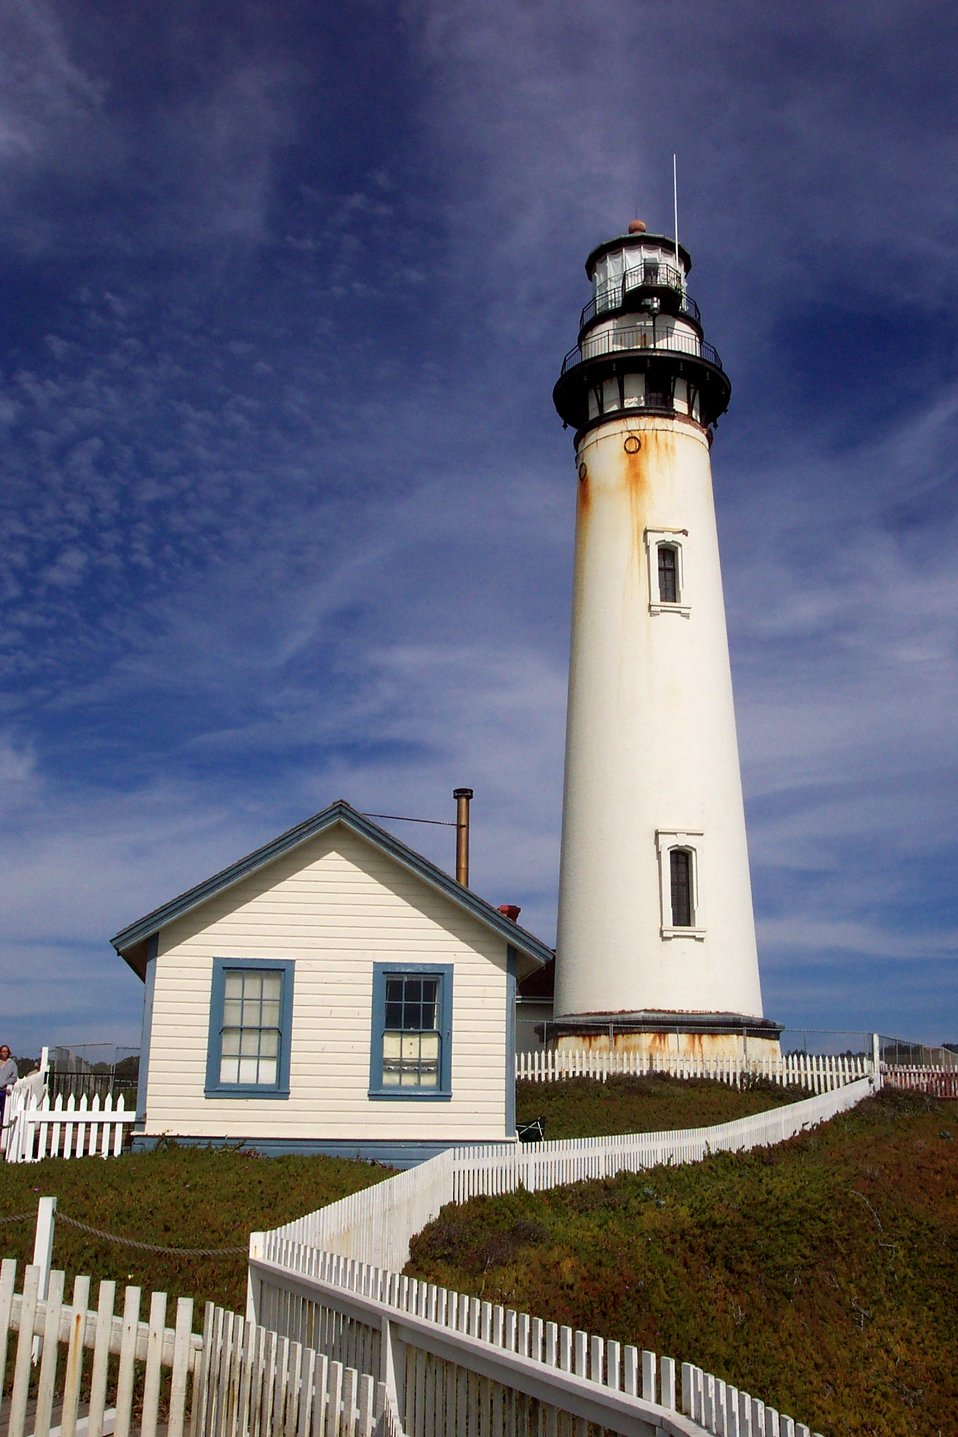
Pigeon Point Lighthouse, 27 miles north of Santa Cruz along Highway 1. The lighthouse was built in 1872 and is 115-feet high. Pigeon Point is named for the clipper ship CARRIER PIGEON which ran aground here on June 6, 1853. The Coast Survey Steamer ACTIVE assisted in rescuing the crew and passengers and transport ing them to San Francisco.